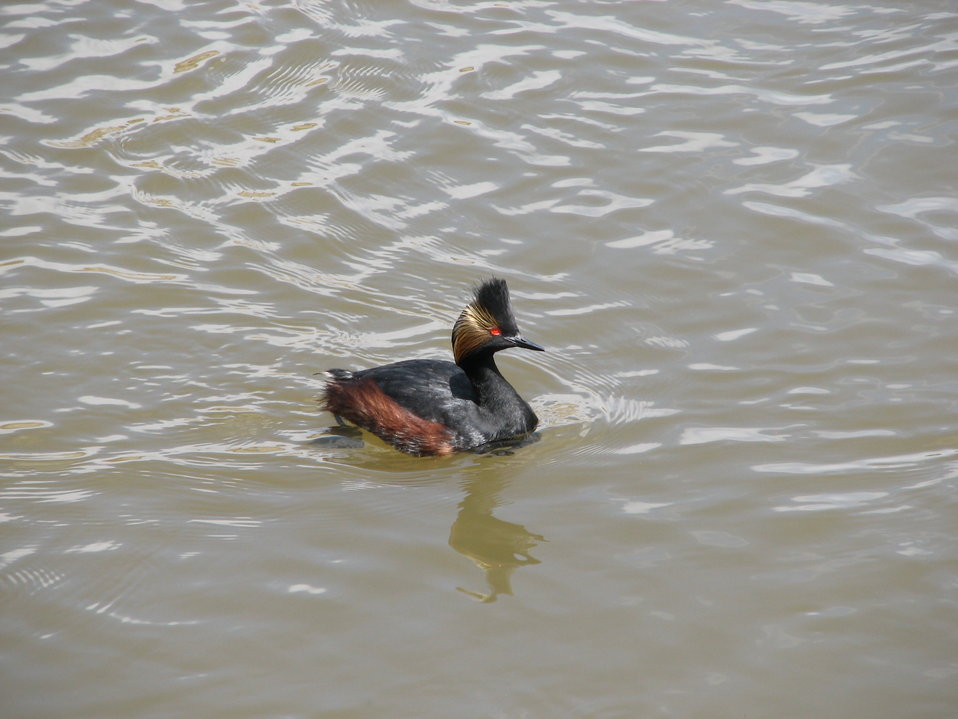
Eared Grebe, North Platte River, Carbon County, WY.

Credit: Pedro 'Pete' Ramirez, Jr. / USFWS